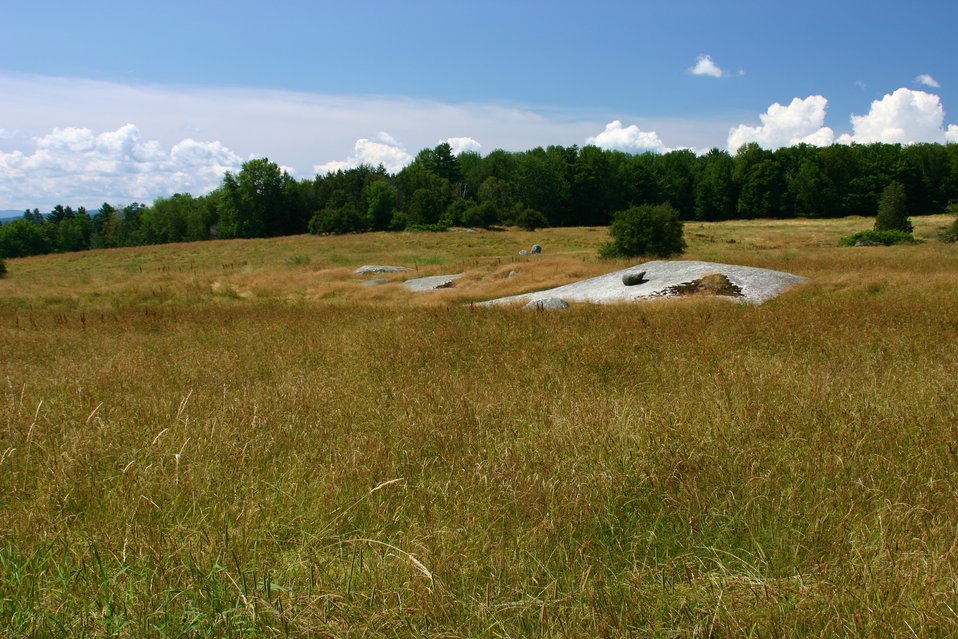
Eagle Point Unit July 28, 2011

Old field grasslands on the new Eagle Point Unit of Missisquoi NWR. This unit is being managed under a cooperative agreement with the Vermont Fish and Wildlife Department.